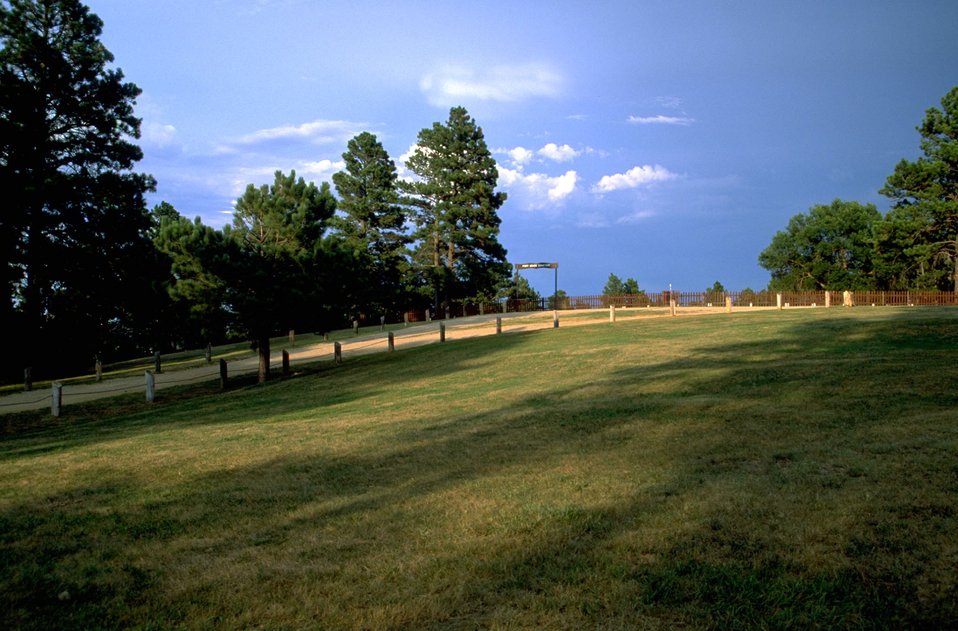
Old Post Cemetery in background at the south end of Fort Meade